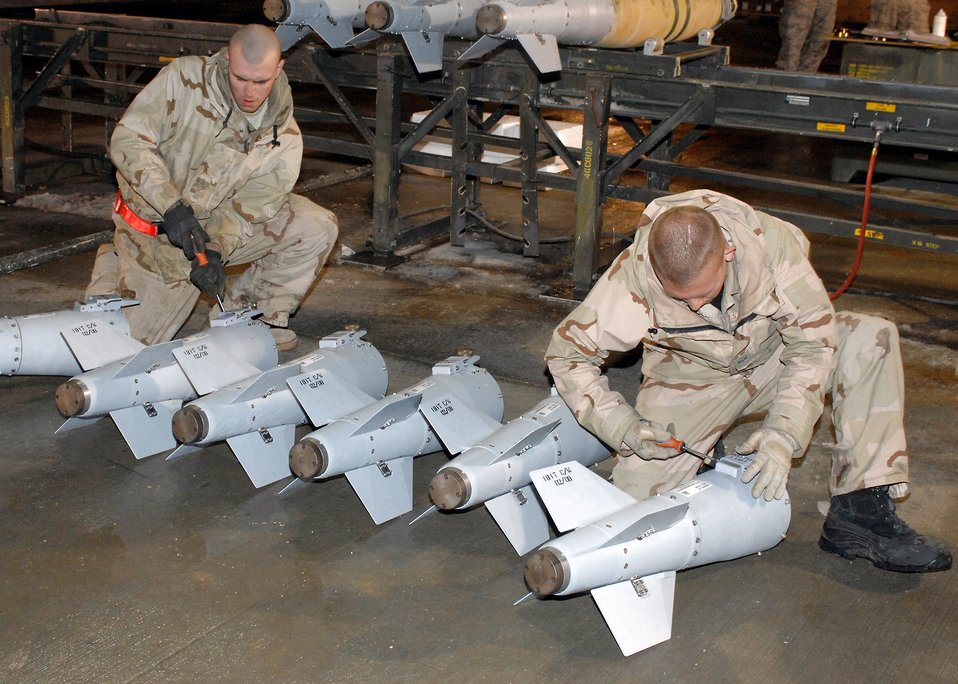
How to build a bomb

Airman 1st Class Jedediah McClain (left) and Airman 1st Class Zack Demeter reset umbilical connectors on the fins for guided bomb unit-38 bombs Feb. 14 at Bagram Air Base, Afghanistan. Both are munitions troops with the 455th Expeditionary Maintenance Squadron. Airman McClain's home unit is the 4th Equipment Maintenance Squadron, Seymour Johnson Air Force Base, N.C. and Airman Demeter is from the 52nd Equipment Maintenance Squadron, Spangdhalem Air Base, Germany.